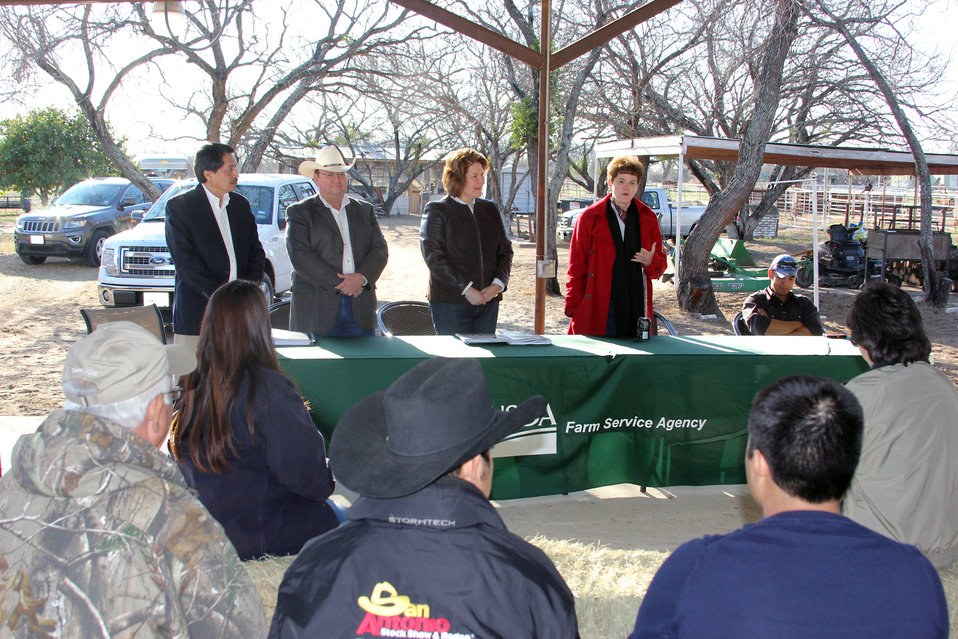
U.S. Department of Agriculture (USDA) Texas agency leaders, including Rural Development (RD) Daniel Torres, Texas State Conservationist, Natural Resources Conservation Service (NRCS) Salvador Salinas, and Texas State Executive Director Judith Canales, join Agriculture Deputy Secretary Krysta Harden as they visit with South Texas farmers and ranchers about Strikeforce at Miguel Ruiz’s ranch in Lytle, TX on Thursday, Feb. 27, 2014.